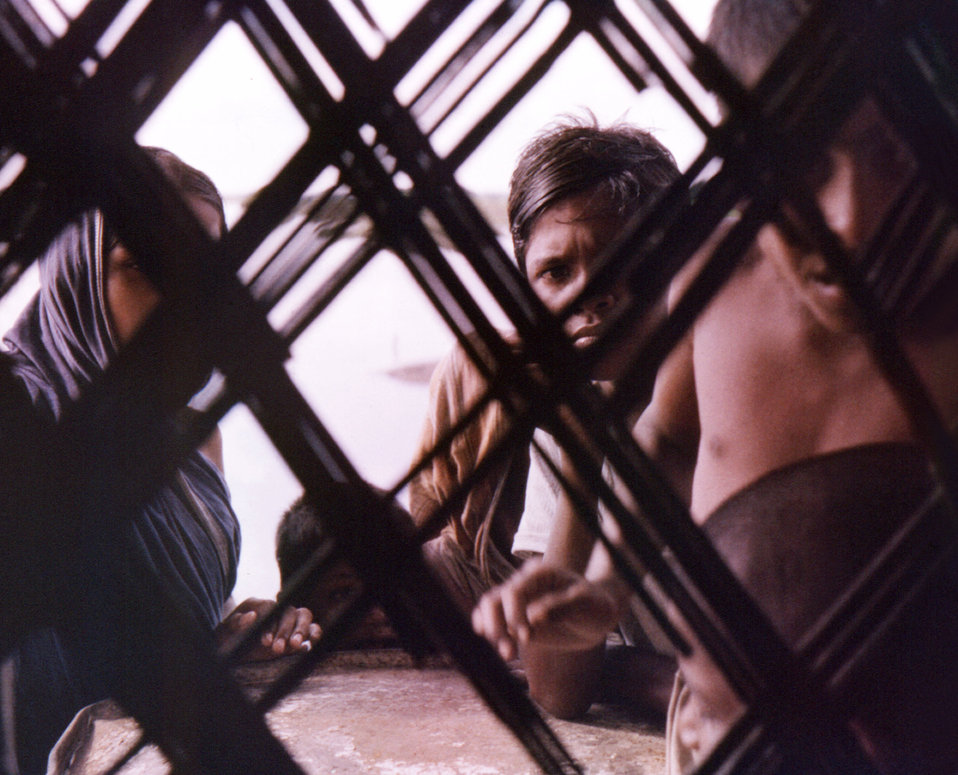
This September, 1975 photograph, captured these children peering into the Smallpox Office located at the Lord Harding Bazaar, on Bhola Island, Bangladesh.